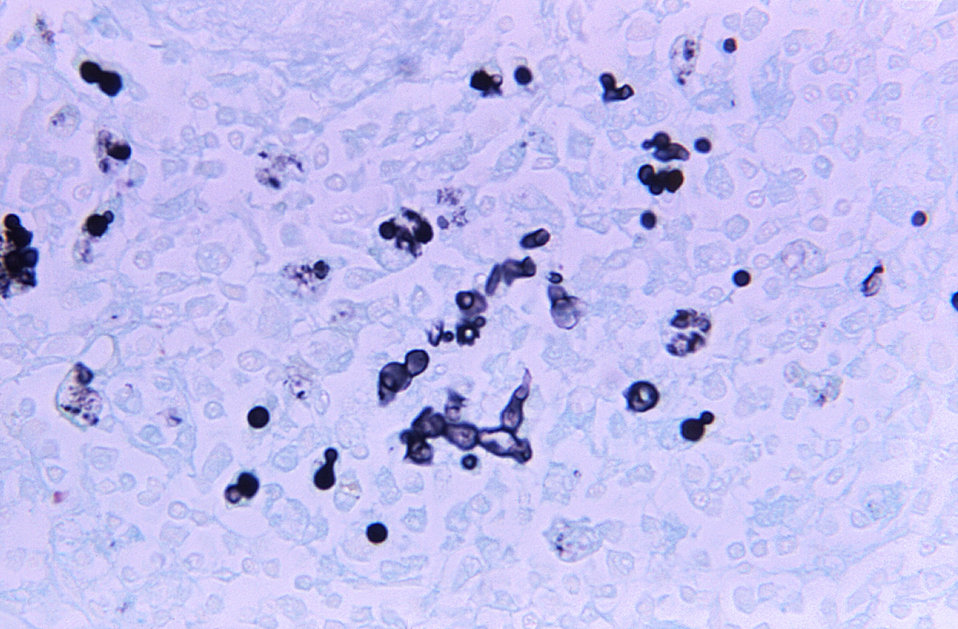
Magnified 850X, this Gamori-stained photomicrograph of a canine liver tissue specimen, revealed the presence of budding Blastomyces dermatitidis fungal cells of various sizes. Note the accompanying filaments, or mycelium.What is blastomycosis?